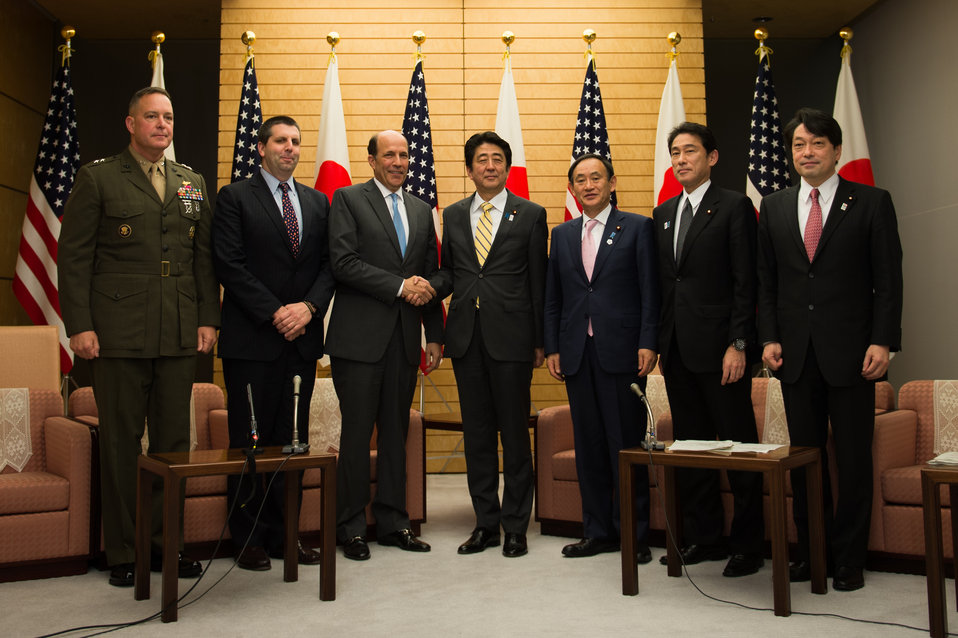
Joint Press Announcement of the Okinawa Consolidation Plan

U.S. Ambassador to Japan John V. Roos and Japanese Prime Minister Shinzo Abe pose for a photo at the joint press announcement of the Okinawa Consolidation Plan, with, from left: U.S. Major General Andrew W. O'Donnell, Jr.; Deputy Commander of the United States Forces, Japan; U.S. Assistant Secretary of Defense Mark W. Lippert; Japanese Chief Cabinet Secretary Yoshihide Suga; Japanese Minister of Foreign Affairs Fumio Kishida; and Japanese Minister of Defense Itsunori Onodera, in Tokyo, Japan, on April 5, 2013.